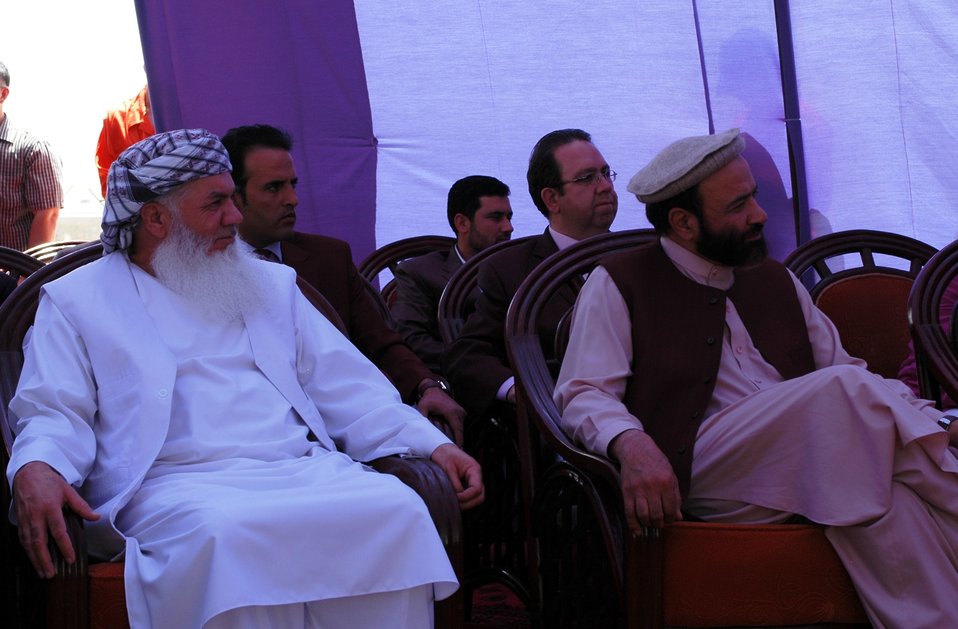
105 MW Tarakhil Power Plant Handover